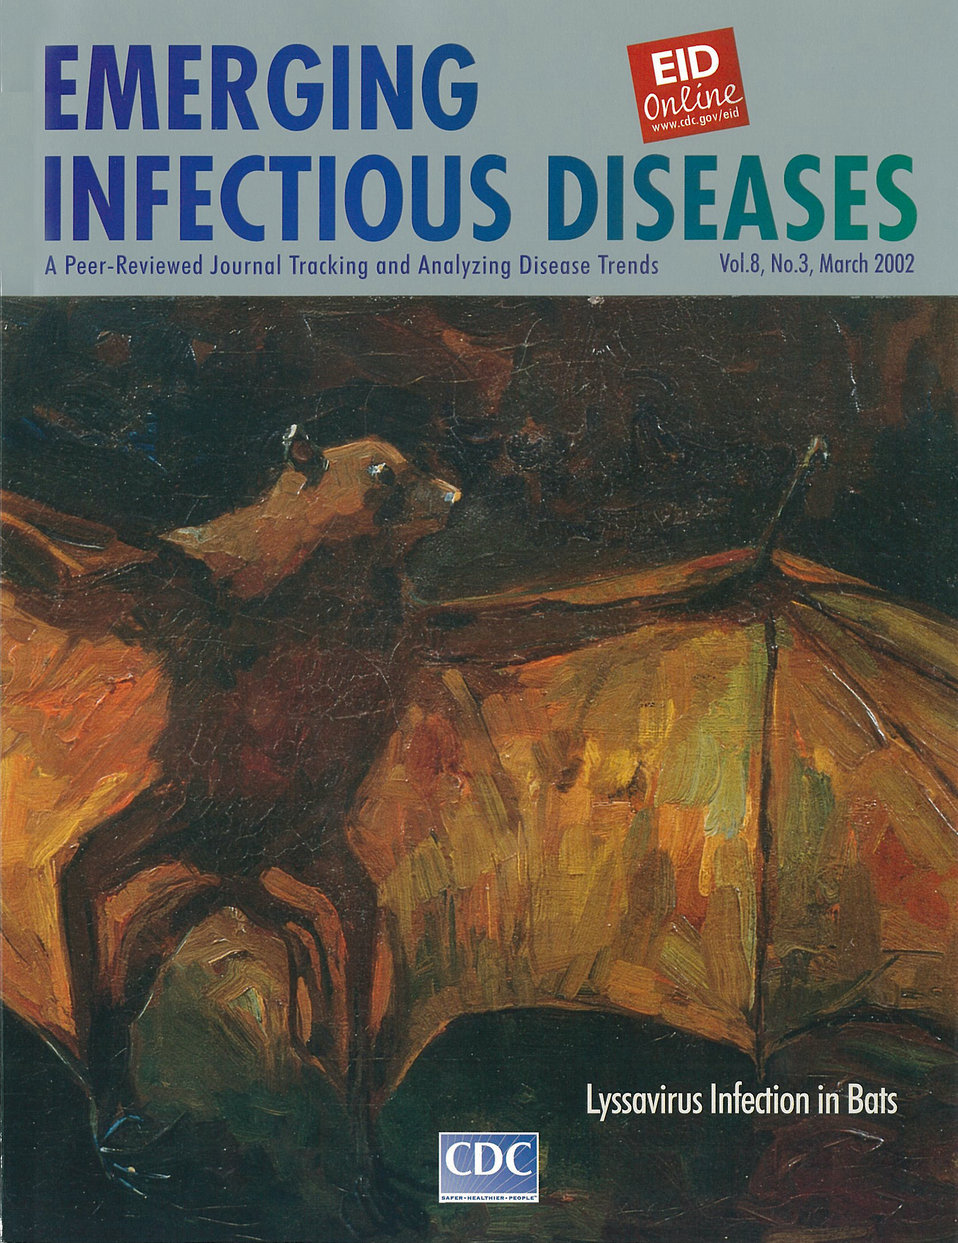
Emerging Infectious Diseases (EID) cover artwork for Volume 8, Number 3, March 2002 issue.